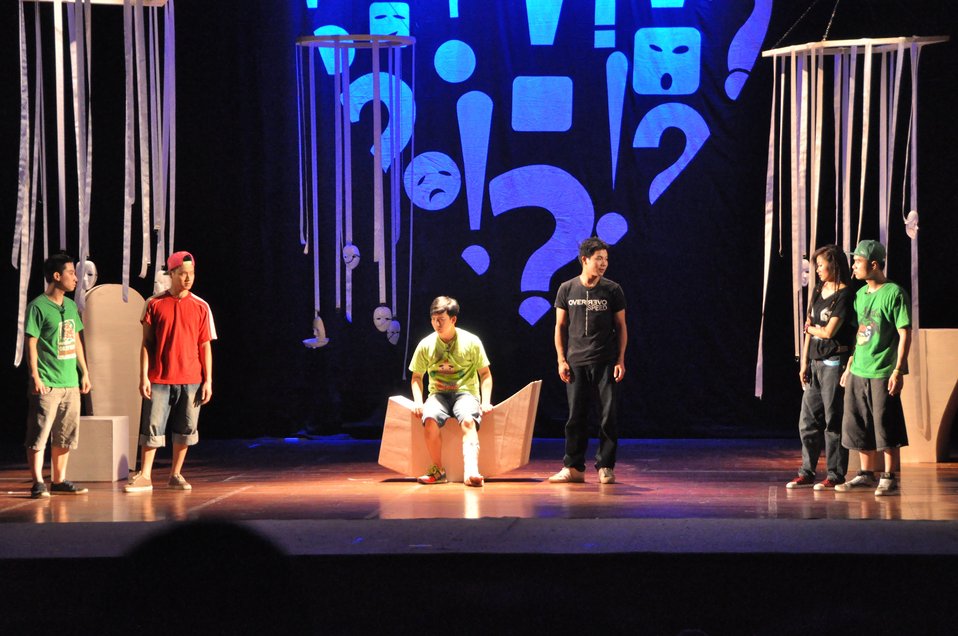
PEPFAR Musical Questions and Exclamations

May 17, 2013